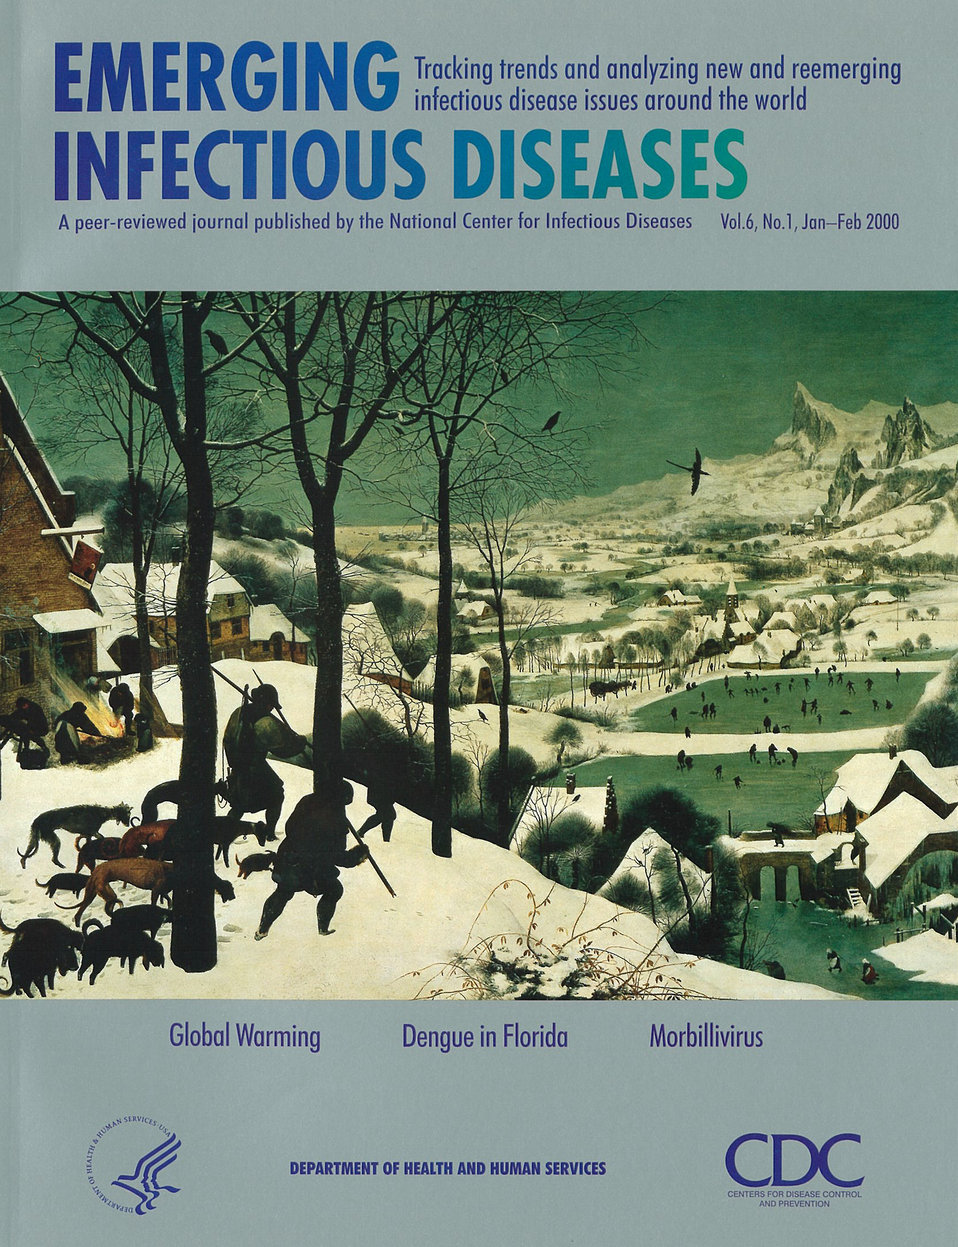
Emerging Infectious Diseases (EID) cover artwork for Volume 6, Number 1, January-February 2000 issue.